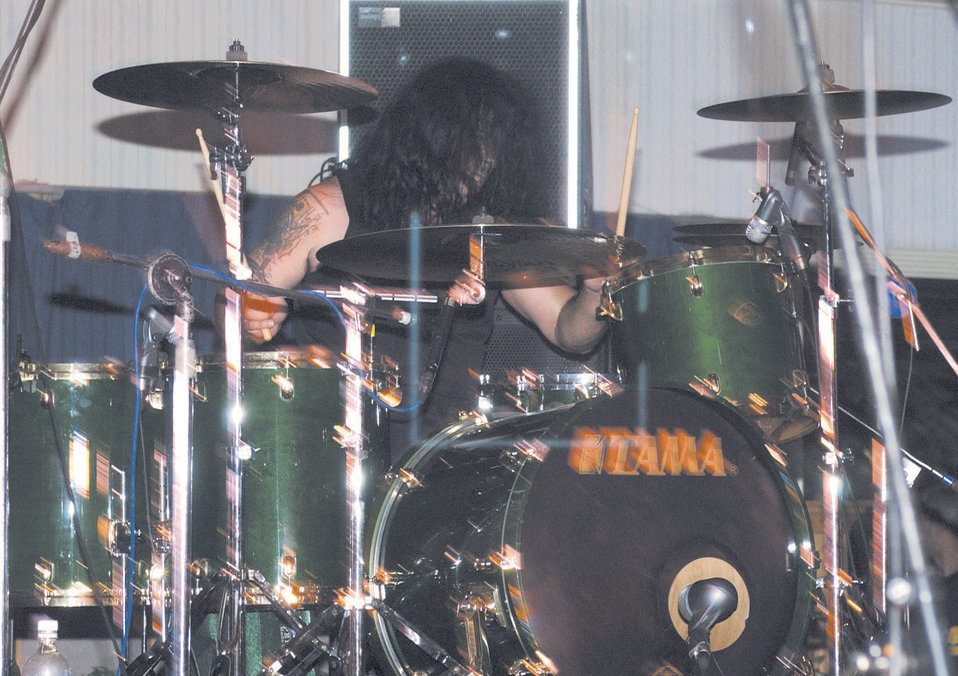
'Metal mayhem' returns to Kunsan

KUNSAN AIR BASE, South Korea -- Frankie Banali performs during Quiet Riot's opening set May 17. The performance wrapped up a six-day concert series at military installations across South Korea and featured performances by Quiet Riot and Skid Row.